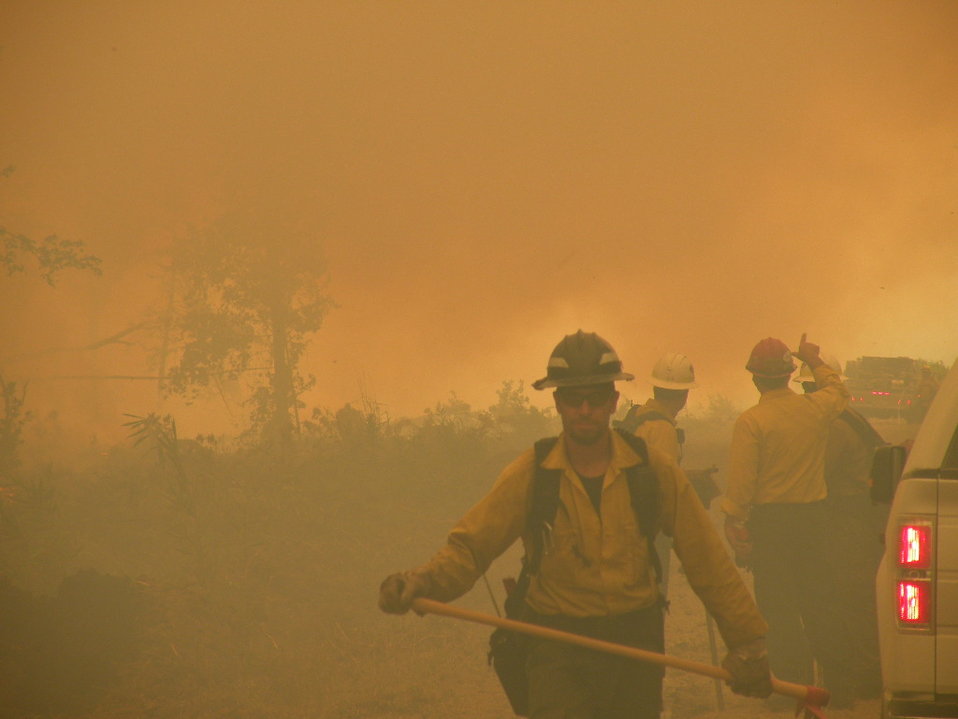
Smoky workplace

Suffolk, VA, August 2011: Firefighters endure hot and smoky conditions at the Lateral West wildfire on Great Dismal Swamp National Wildlife Refuge.